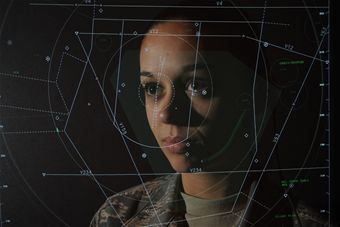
Maintaining separation in the air

Staff Sgt. Michelle Salyer controls air traffic in her area of responsibility at Whiteman Air Force Base, Mo. She is an air traffic controller with the 509th Operations Support Squadron.